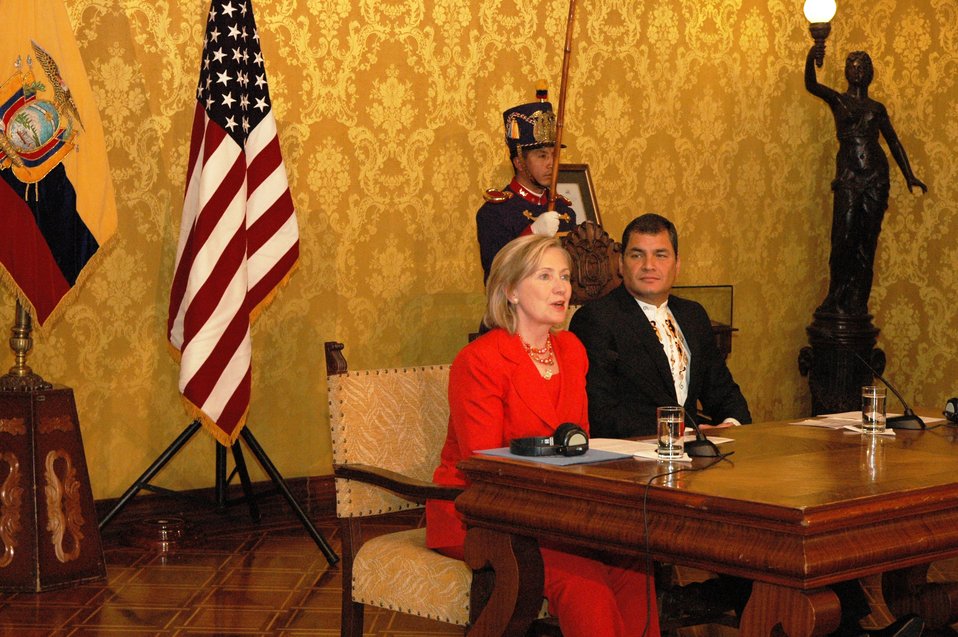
Ecuadorian President Correa and Secretary Clinton Hold Press Avail

U.S. Secretary of State Hillary Rodham Clinton and Ecuadorian President Rafael Correa participate in joint press avail in Quito, Ecuador, on June 8, 2010.